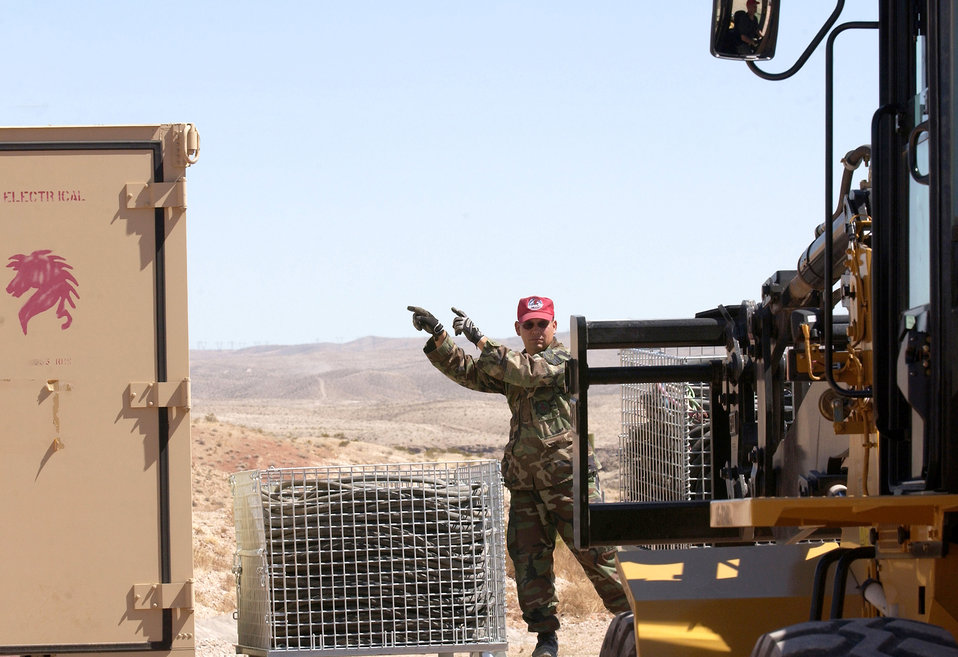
Red Horse in action

Staff Sgt. Jeff Ray marshals in electrical cable equipment during a bare-base build-up exercise at Nellis Air Force Base, Nev., April 8 to 9, 2006. The operation included beddown and construction operations for 120 Airmen. The camp had a mobile field kitchen with generators, reverse-osmosis water purification unit and field latrine equipment. Sergeant Ray is with the 555th Red Horse Civil Engineer Squadron.